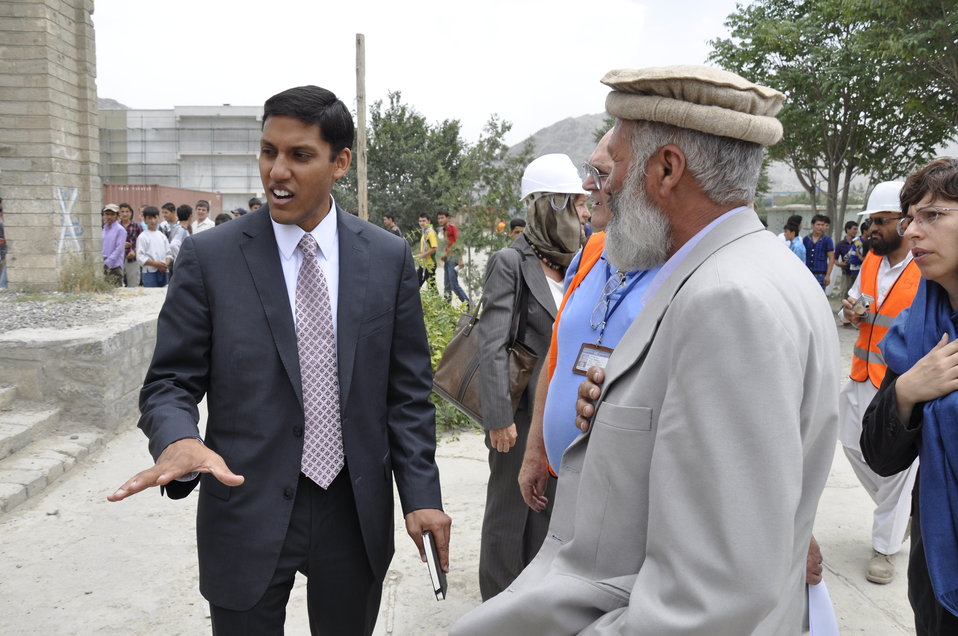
Ghazni High School in Kabul